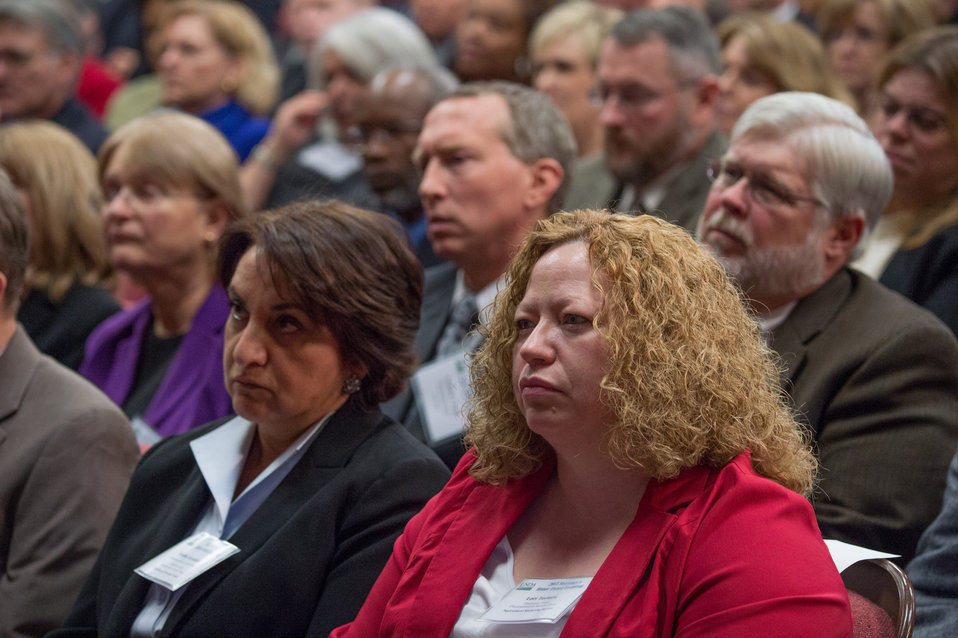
Members of the audience at the 2013 Secretary's Honor Awards ceremony held in the Jefferson Auditorium at the U.S. Department of Agriculture (USDA) in Washington, D.C. on Wednesday, Dec. 11, 2013.